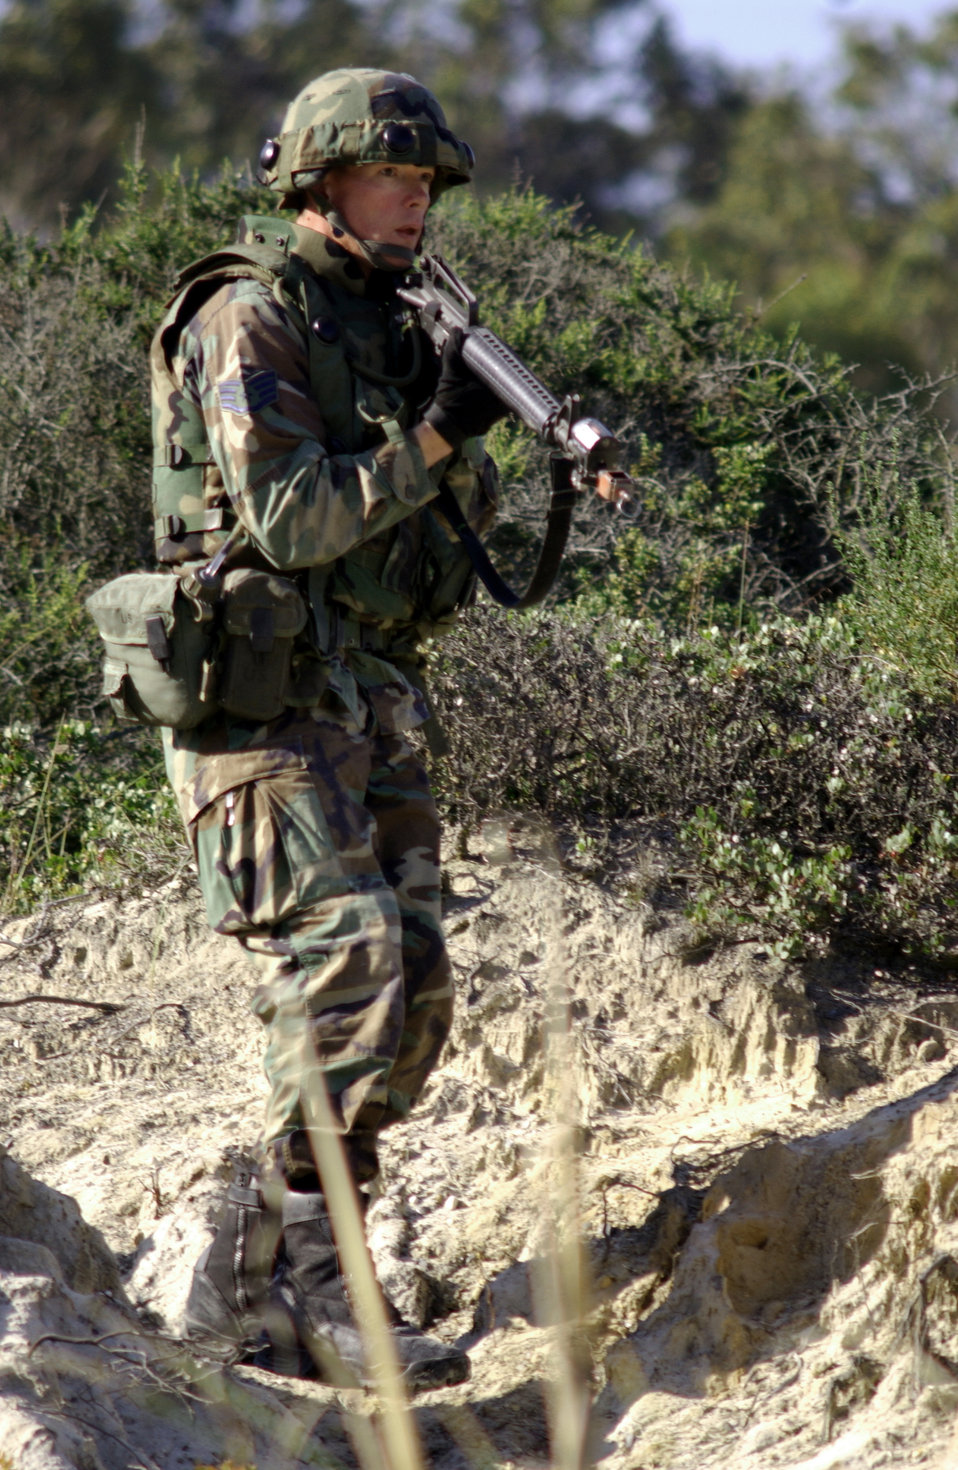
Ready or not, here I come!

VANDENBERG AIR FORCE BASE, Calif. -- Staff Sgt Matthew Tussey aggresses opposing forces during the security forces tactics competition for Guardian Challenge here May 4. Guardian Challenge, the world's premier space and missile competition, is a four-day event held annually. It tests the wartime readiness of Air Force Space Command's Airmen in spacelift, ICBM operations, communications, maintenance, helicopter operations, security forces and chef food preparation. Sergeant Tussey is assigned to the 21st Space Wing at Peterson Air Force Base, Colo.